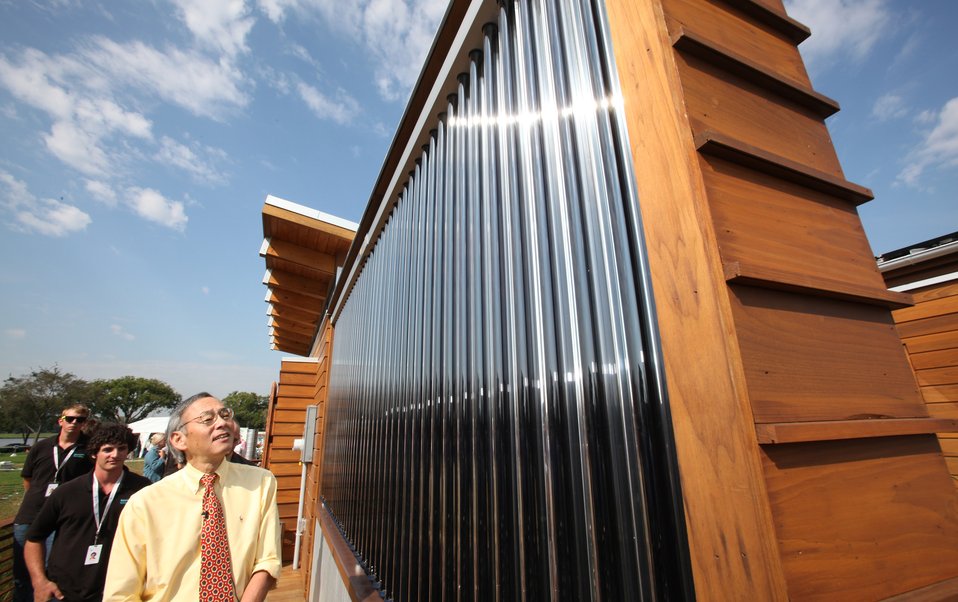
Energy Secretary Steven Chu speaks with members from the Appalachina State University during the U.S. DOE Solar Decathlon, Washington, DC, September 30, 2011. (Credit: S.Paltera/ U.S. DOE / Solar Decathlon)
The Solar Decathlon is a competition that challenges college and university teams from around the world to design, build, and operate solar-powered houses that are affordable, highly energy efficient, attractive, and easy to live in. The 2011 teams and their houses represented a broad range of design solutions, geographic locations and climate, and were targeted toward urban, suburban and rural settings. The houses were intended for different housing markets, including lower-income, disaster relief, retirement, and single family.